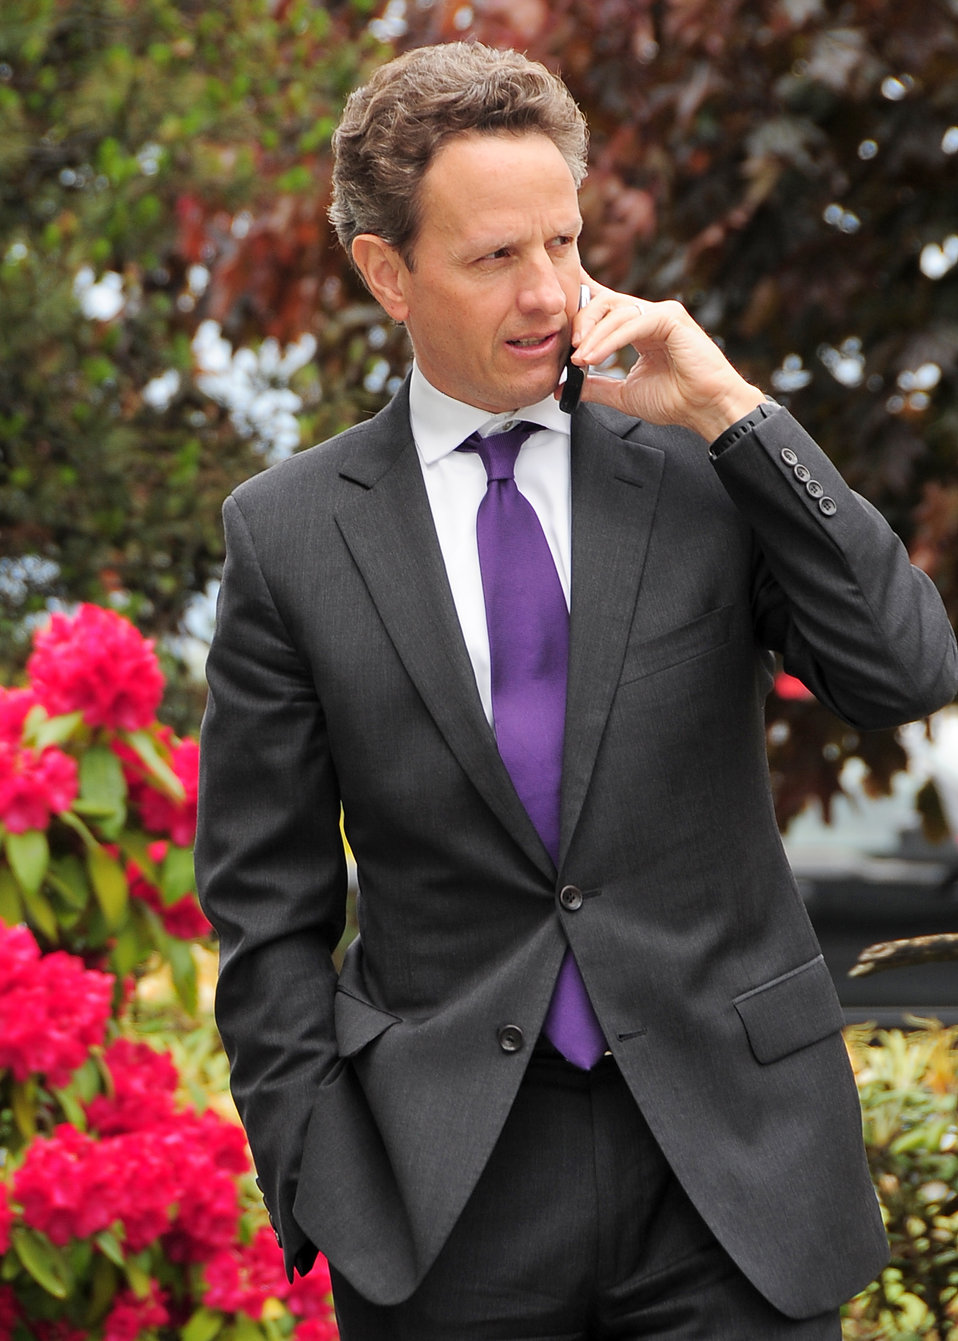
Tacoma, 5/18/2010